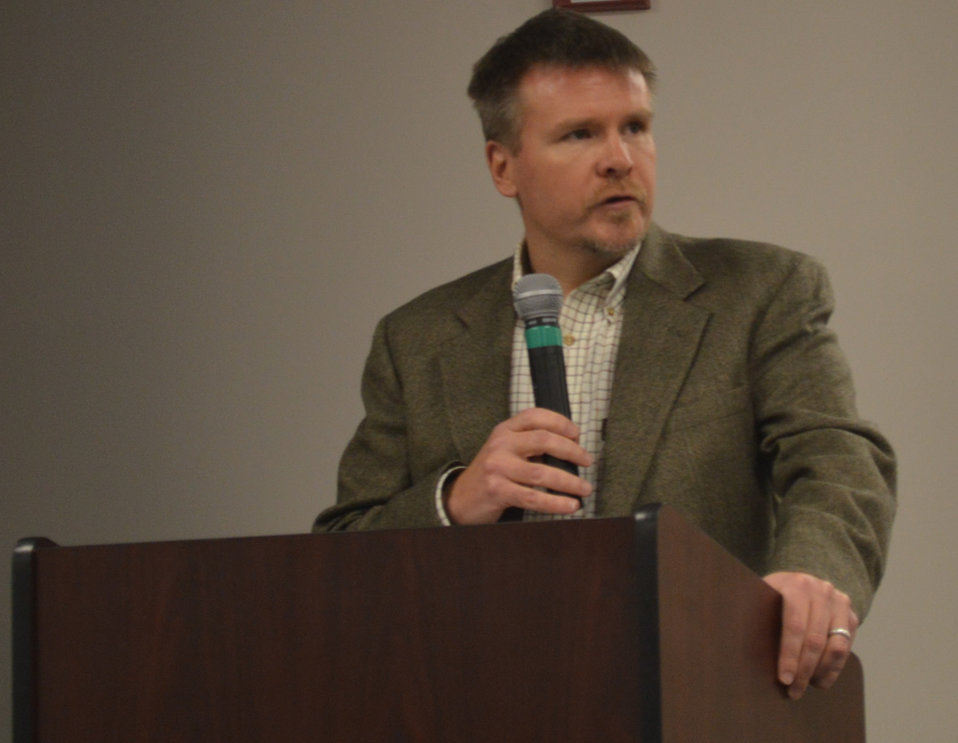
Regional Director Steve Guertin Moves on to Senior Leadership Position

On November 1, 2012, USFWS Mountain-Prairie Regional Director, Steve Guertin, served his last day as Regional Director before moving on to a senior leadership position at Headquarters.

Regional leadership and partners shared their memories of Steve's outstanding leadership and his unique ability to leverage his outstanding technical skills while maintaining a very personable persona - all amidst a variety of challenging issues.